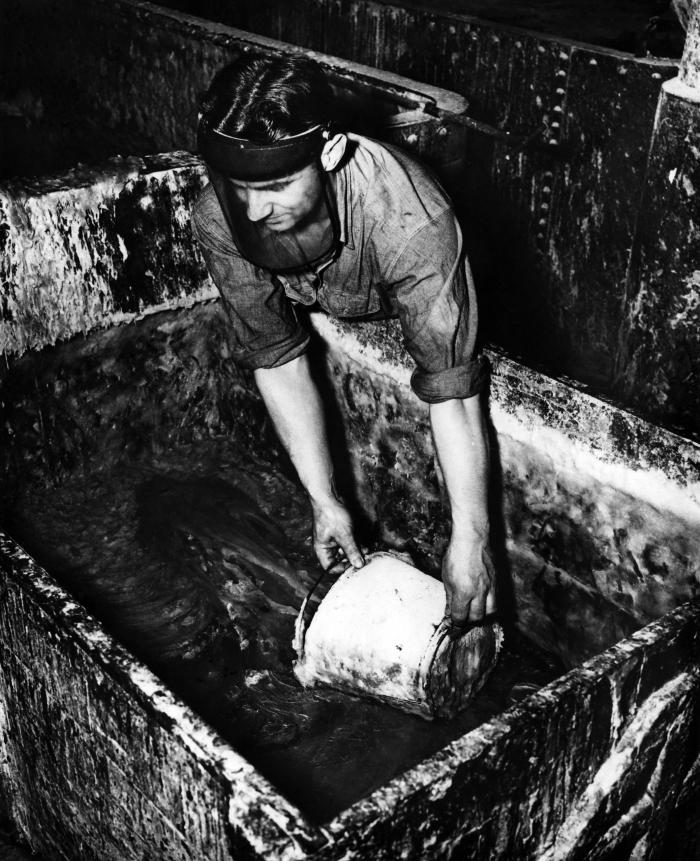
This historic image, provided by the Center for Disease Control's (CDC), National Institute for Occupational Safety and Health (NIOSH), depicted an industrial worker who was in the process of manufacturing soap, and was returning a batch of soap to a large kettle in order to continue the purifactive process. Note that the man, though wearing a protective face mask, was not wearing any gloves, or filtered breathing mask, which are accessories that today are readily recommended based on research studies focused on improving worker safety in the workplace environment.